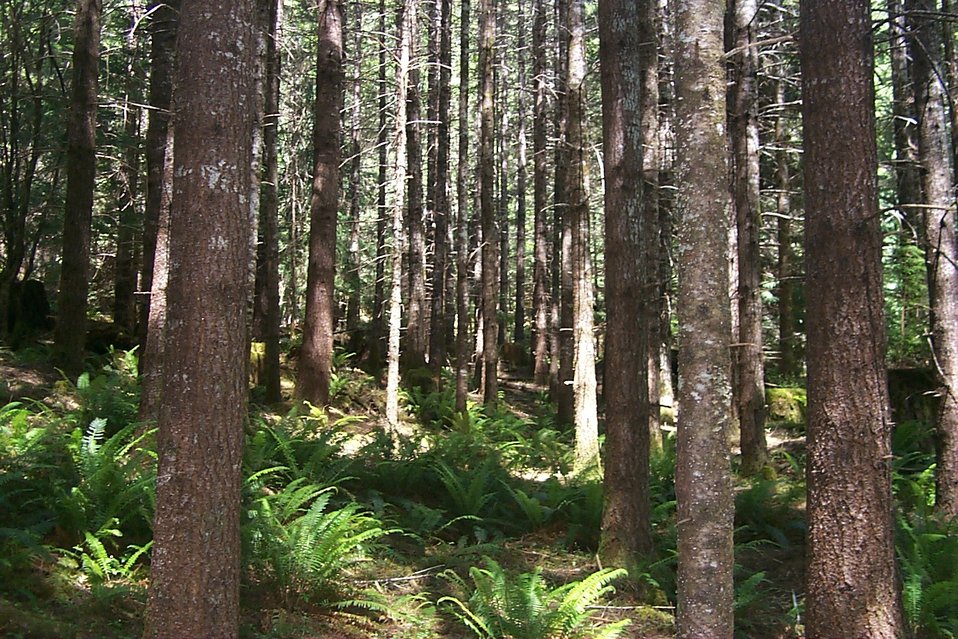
Camas East Timber Sale in Late Successional Reserve.